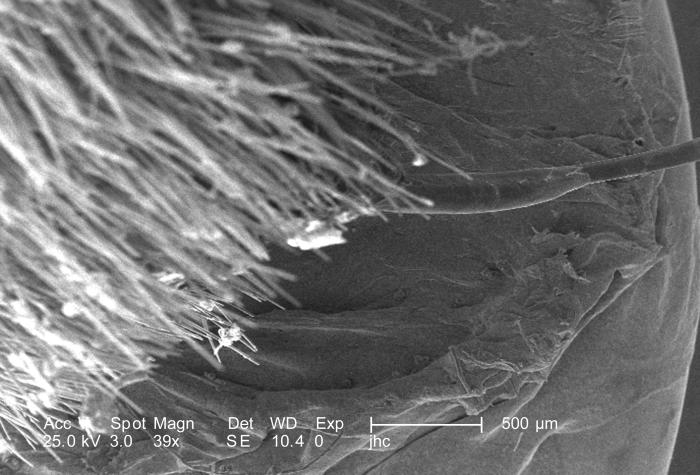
Under a low magnification of 39X, this scanning electron micrograph (SEM) focused on the proximal base of a female 'velvet ant's', Dasymutilla sp., stinger. Note that the base of the stinger is encased in a sheath.